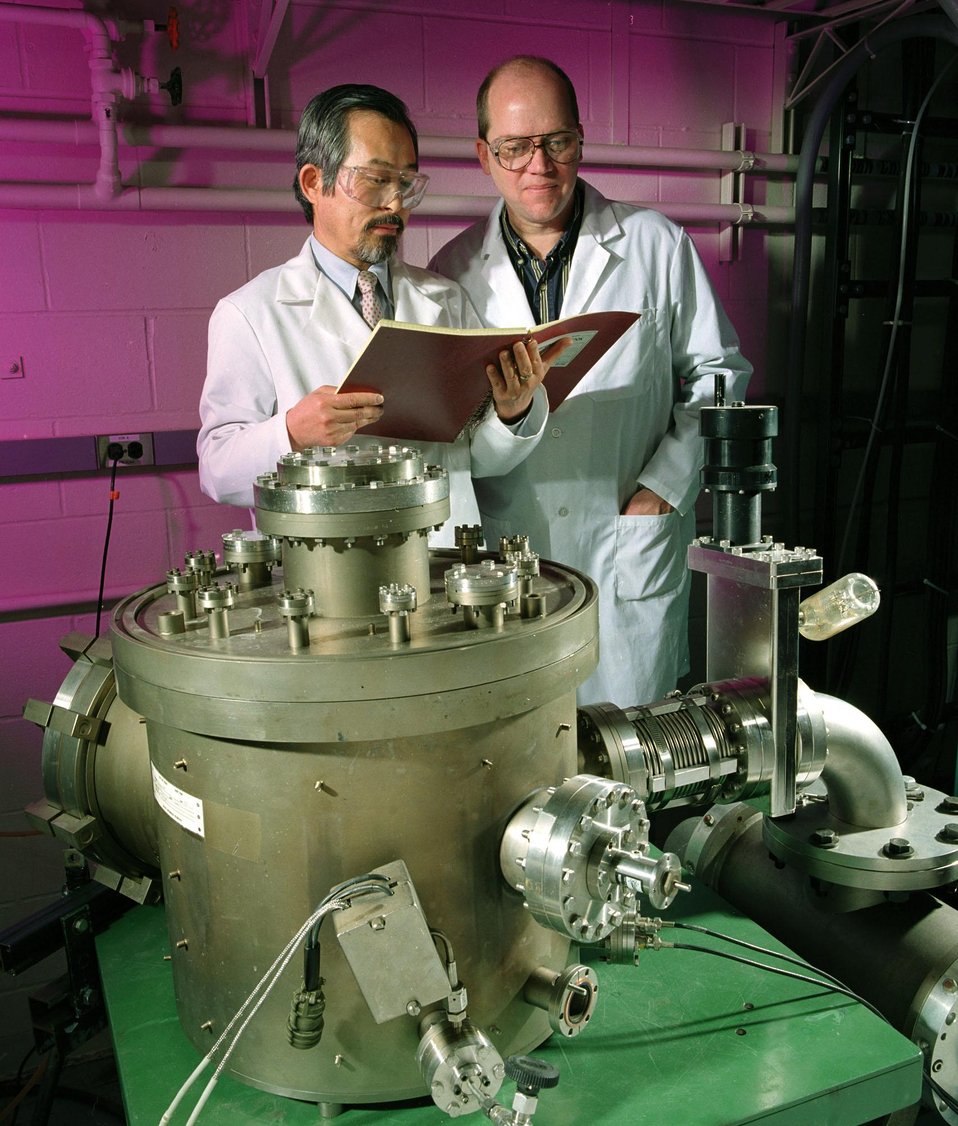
NANOFLUID DEVELOPERS STEVE CHOI AND JEFF EASTMAN OF ANL WORK WITH INDUSTRY TO IMPROVE UNDERSTANDING OF NANOFLUIDS.

ADDING NANOSCALE PARTICLES, SO SMALL THEY ARE MEASURED IN BILLIONTHS OF A METER, TO CONVENTIONAL LIQUIDS HOLDS THE PROMISE OF MORE EFFICIENT COOLING FOR ENGINES, MACHINERY AND SUPERCOMPUTERS. ANL SCIENTISTS HAVE FOUND THAT THESE NANOFLUIDS HAVE INCREASED, BY UP TO 150 PERCENT, THE HEAT TRANSFER RATE OF LIQUIDS.